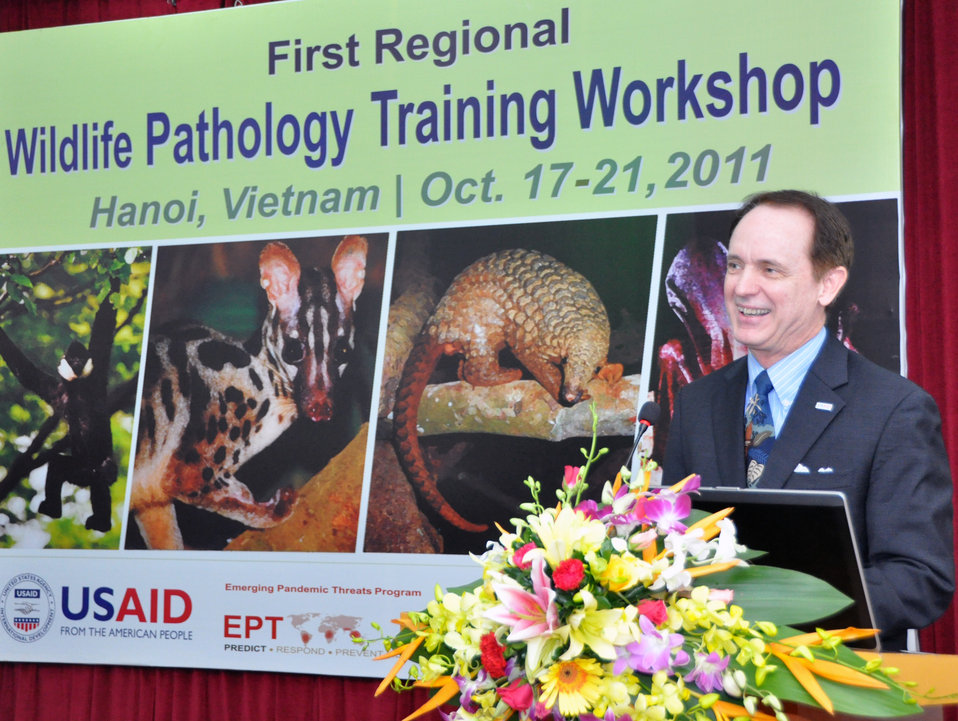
USAID USAID EPT Smithsonian Pathology Training to Detect Emerging Infectious Diseases Wildlife and Other Animals in Vietnam WorkshopSmithsonian Pathology Training to Detect Emerging Infectious Diseases Wildlife and Other Animals in Vietnam Workshop